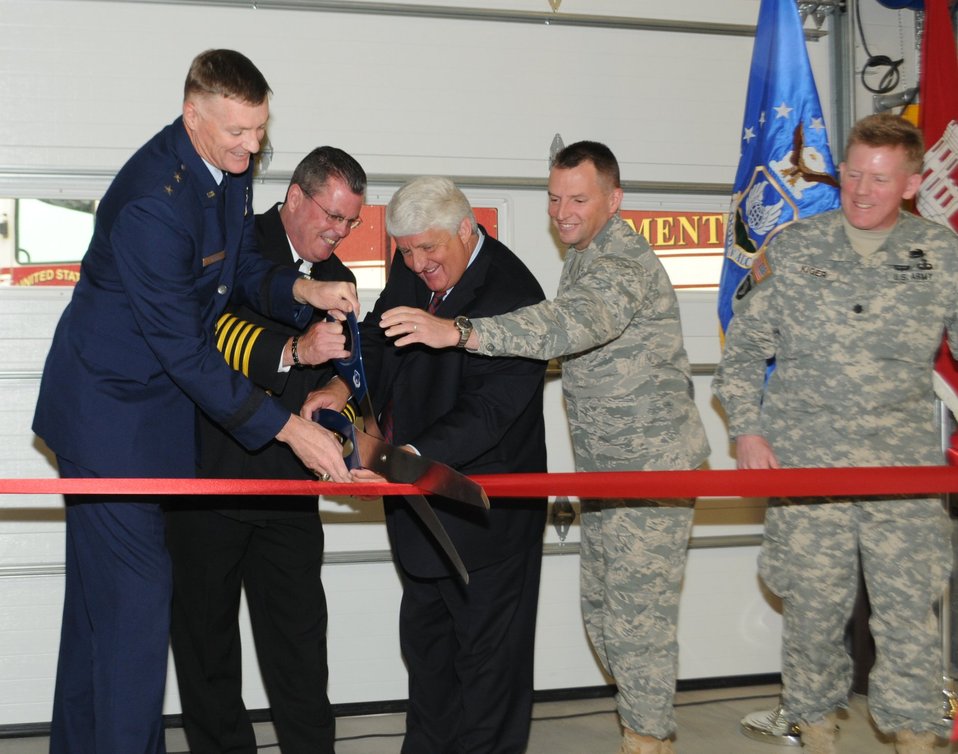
Corps completes first Gold-rated facility at Hill Air Force Base

U.S. Air Force Maj. Gen. Andrew E. Busch (left), Ogden Air Logistics Center commander, joins (from left to right) Fire Chief Paul Erickson; U.S. Rep. Rob Bishop; U.S. Air Force Col. Patrick Higby, 75th Air Base Wing commander; and U.S. Army Lt. Col. Andrew Kiger, U.S. Army Corps of Engineers Sacramento District commander, in cutting the ribbon for the new three-bay fire station at Hill Air Force Base, Utah, May 17, 2011.